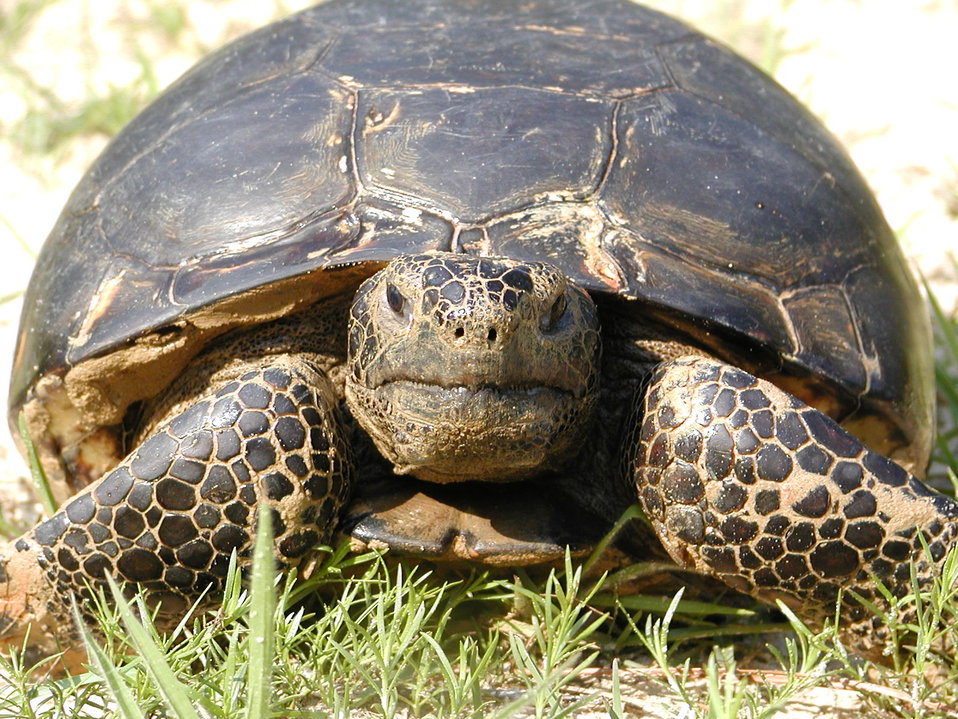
Adult gopher tortoise

An adult gopher tortoise. In Ecology of a Cracker Childhood, which pays homage to the longleaf, Janisse Ray writes that the gopher tortoise is “central in holding the ecosystem together.”